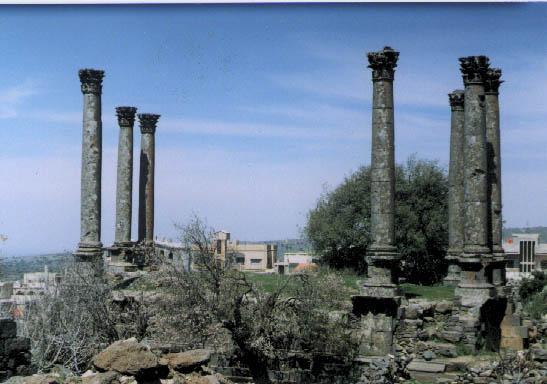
Temple previously believed to be to Helios, but now known to be dedicated to local God Rabbos - see Qanawat article